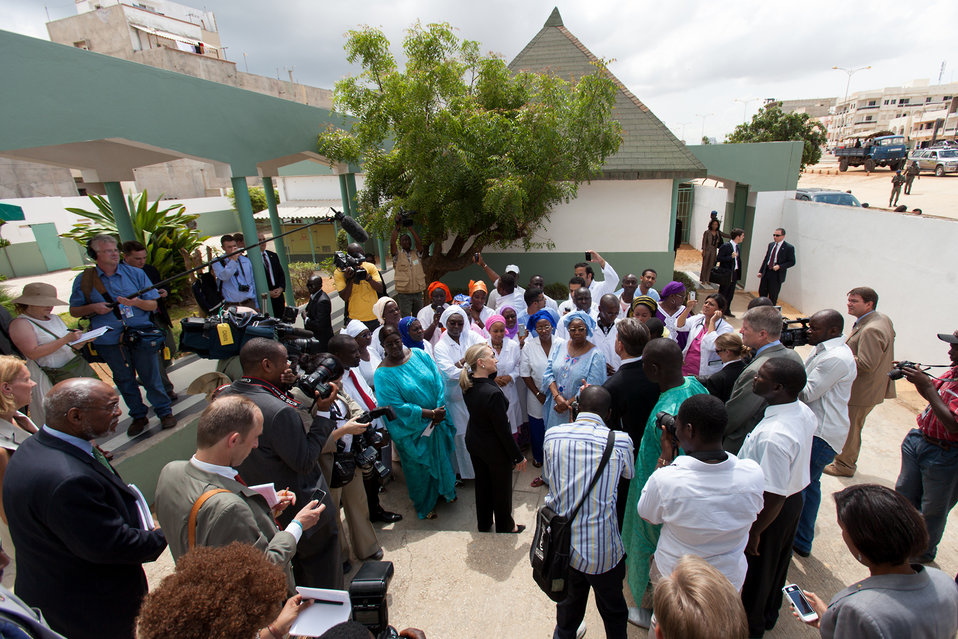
Secretary Clinton Meets with Maguilen Senghor Health Center Staff and Patients

U.S. Secretary of State Hillary Rodham Clinton meets with Maguilen Senghor Health Center staff and patients in Yoff, Dakar, Senegal, on August 1, 2012.